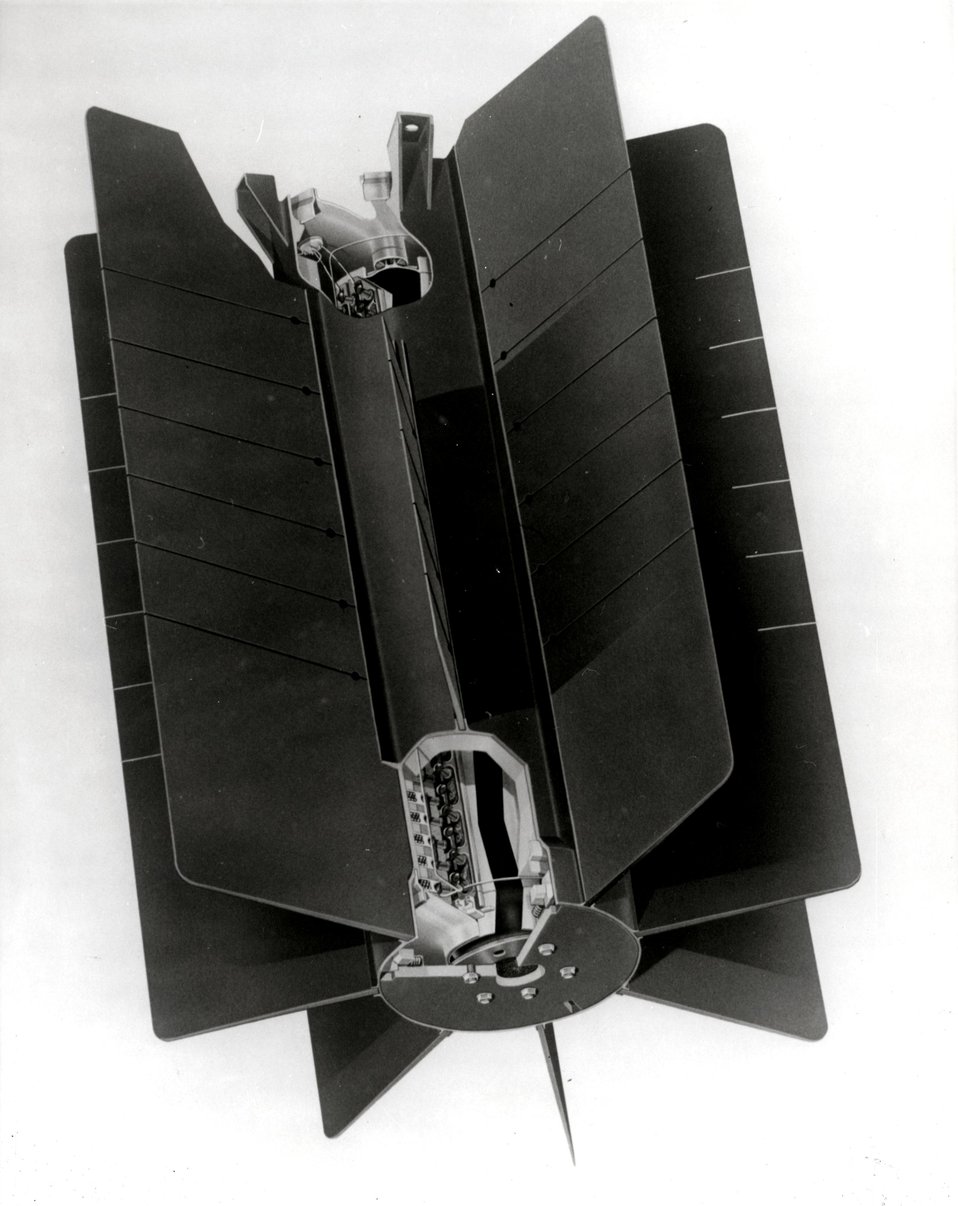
SNAP-27 atomic battery-- cutaway shows the heart of the radioisotope thermometric generator which converts heat energy from the radioactive decay of the Plutonium-238 fuel directly into electric energy without moving parts.